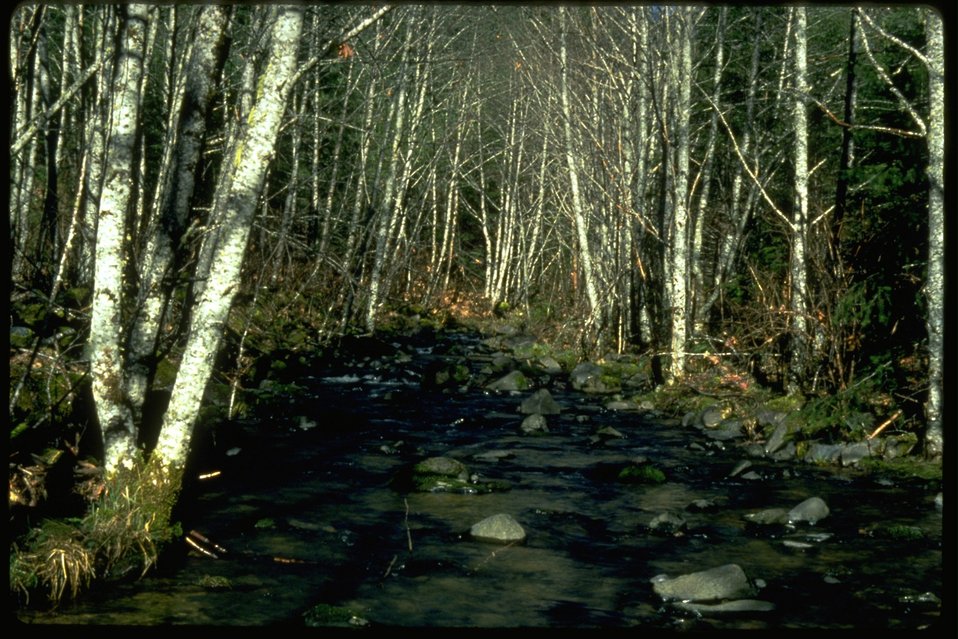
Riparian area on the West Fork of Elk Creek.